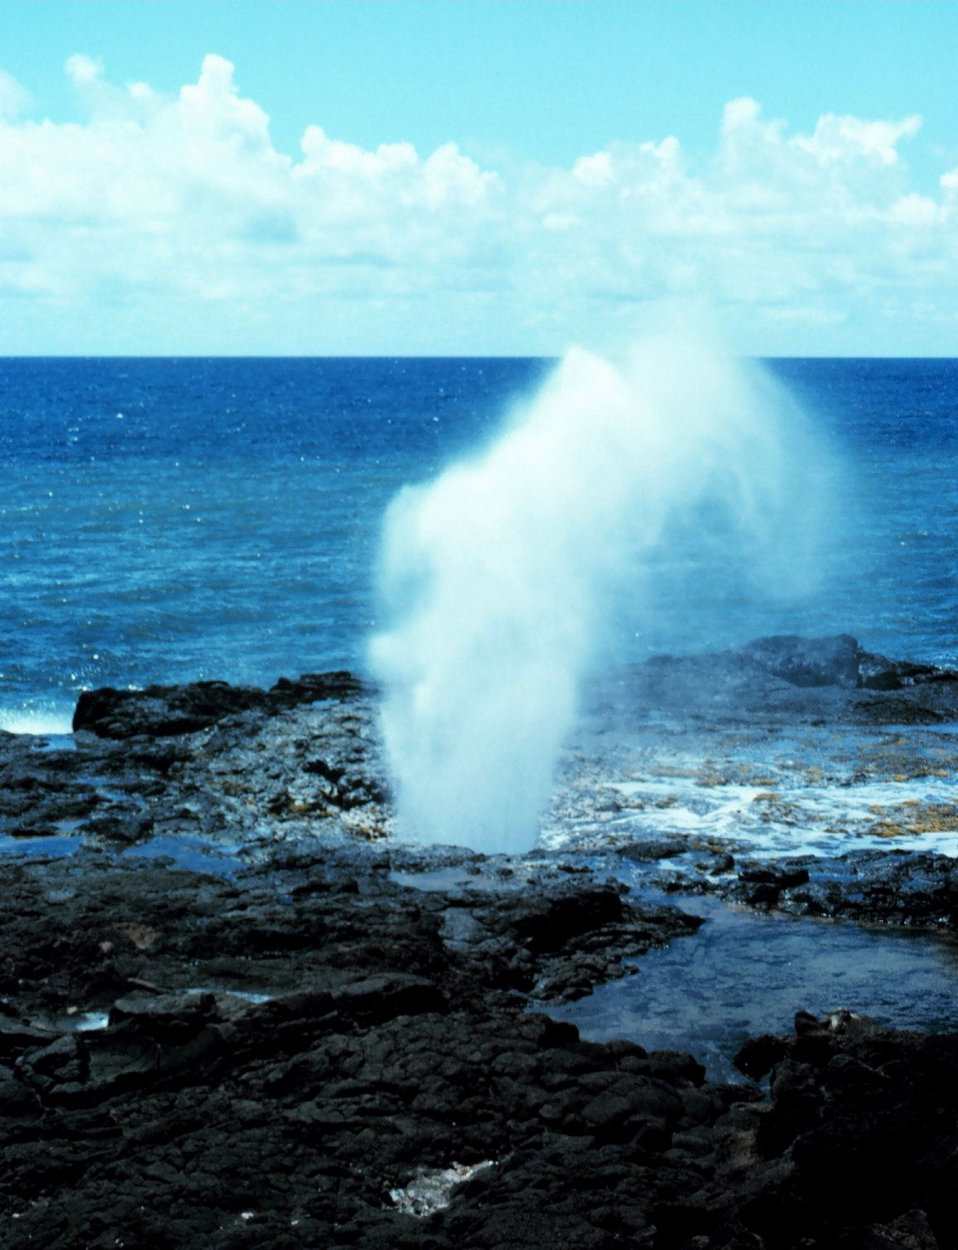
Halona Blowhole